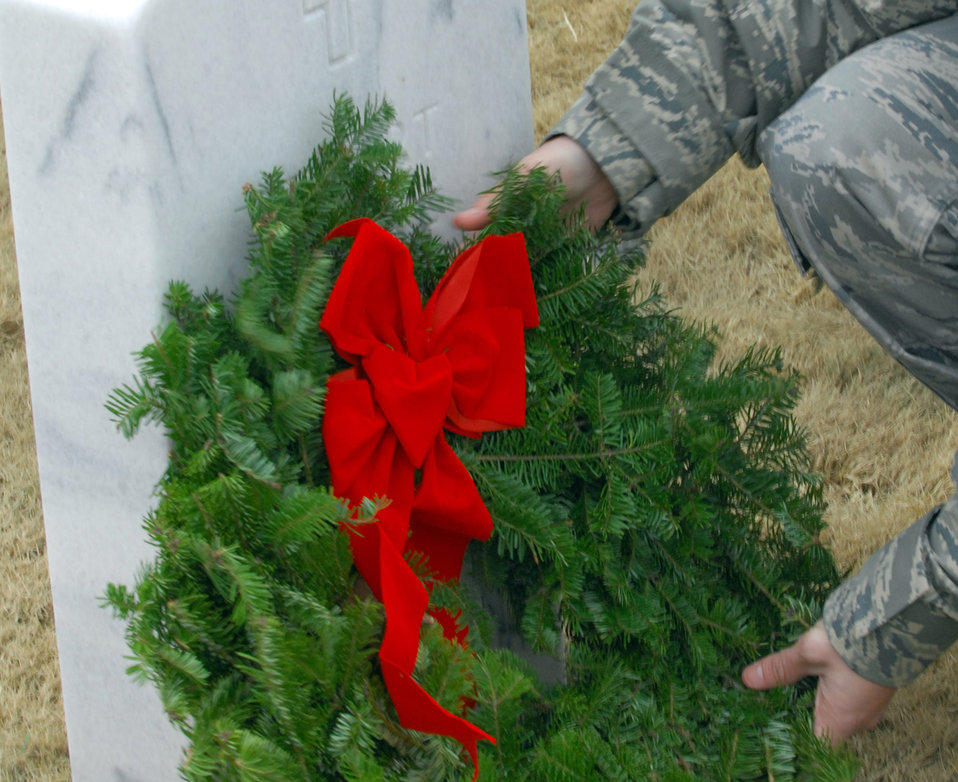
Wreaths Across America

An Airman lays a wreath on the tombstone of a fallen veteran during the Wreaths Across America ceremony Dec. 11, 2010, at Fort Jackson National Cemetery in Columbia, S.C. The ceremony included a memorial presentation, recognition of prisoners of war, those still missing in action and Merchant Marines, a salute by a cannon battery and buglers.